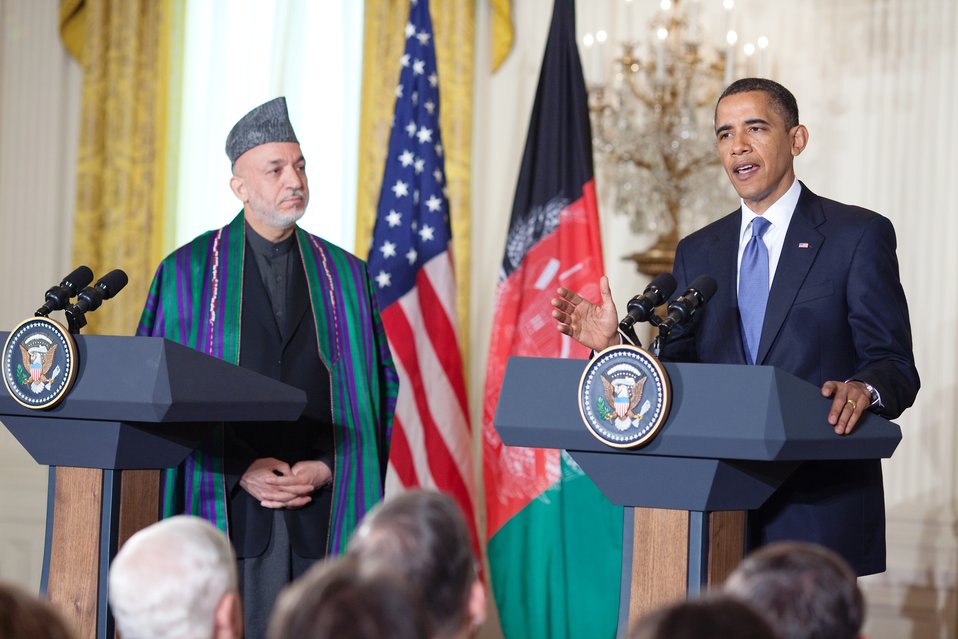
President Obama and Afghan President Karzai Deliver Remarks

President Barack Obama and President Hamid Karzai of Afghanistan deliver remarks at the White House in Washington, D.C., on May 12, 2010.